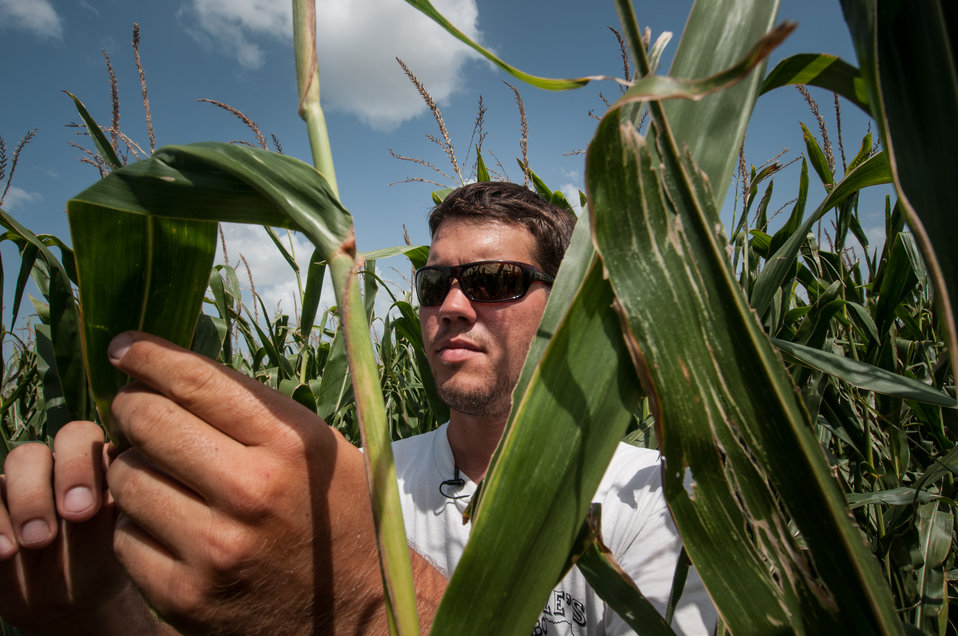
Philip Marek checks the health of a crop of #2 yellow corn at his father's farm, in Wharton County, TX, on Jun. 20, 2013. Philip Marek has been a farm owner since 2010 and started with 210 acres. Marek and his cousin Josh Marek were able to use a U.S. Department of Agriculture (USDA) Farm Services Agency (FSA) small and new farmer and rancher loan programs provided them the ability to handle initial business start-up and equipment purchase.